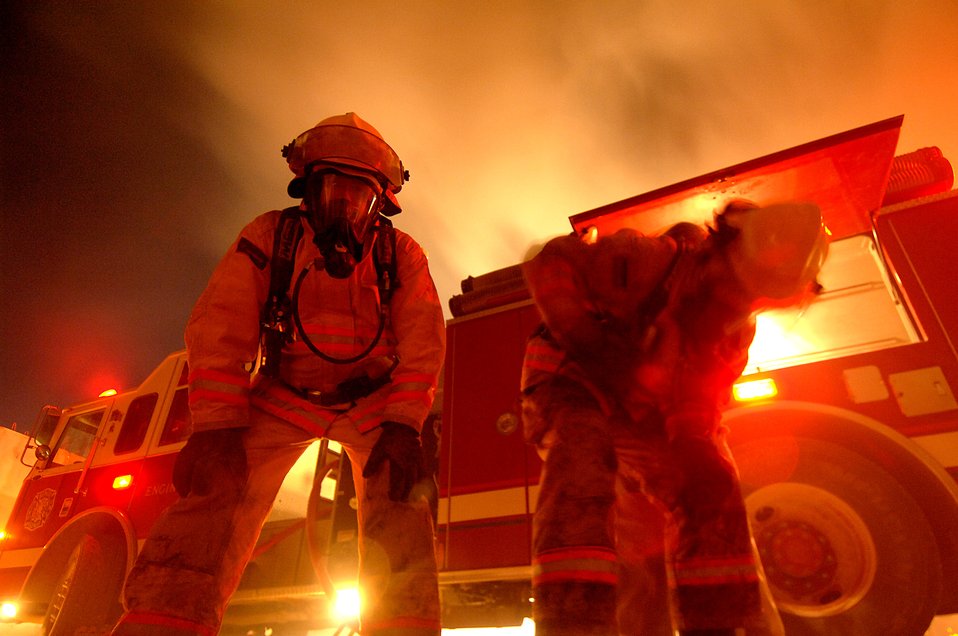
Firefighters battle blaze in Iraq

Running low on air, firefighters from contractor Wackenhut Fire and Emergency Service replace their oxygen tanks while fighting a fire at Forward Operating Base Marez in Mosul, Iraq, on Thursday, June 8. The fire was at a local restaurant and jewelry store.